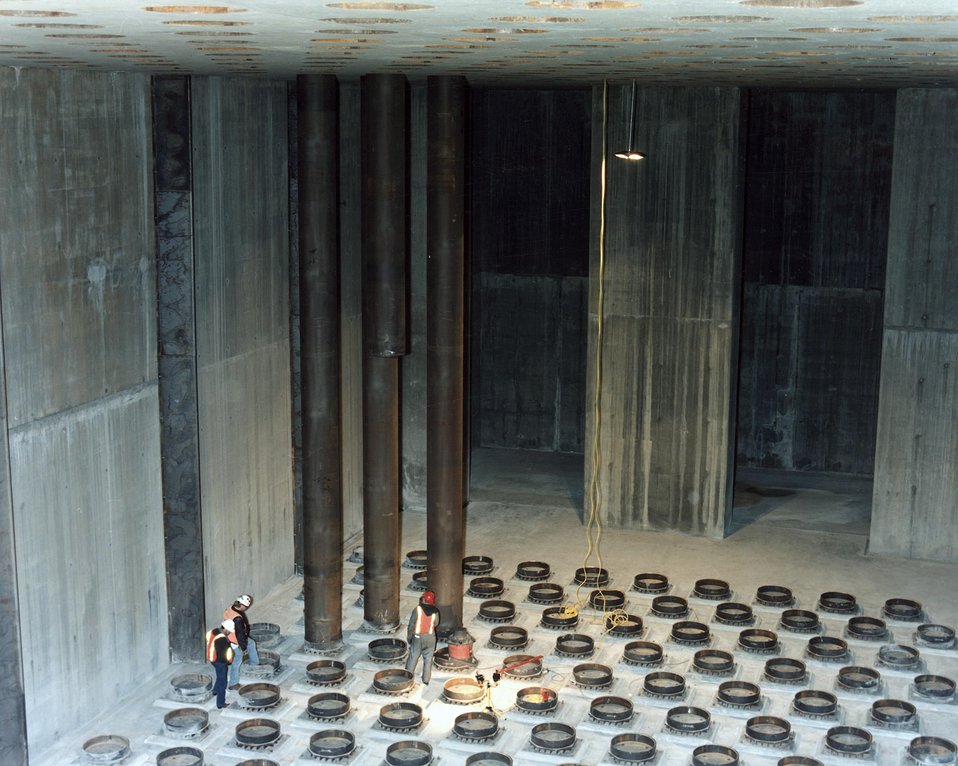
PLACING THE STEEL TUBES THAT WILL HOLD CONTAINERS OF SPENT NUCLEAR FUEL IN THE CANISTER STORAGE BUILDING.
PICTURED IS THE CANISTER STORAGE BUILDING VAULT WHERE WORKERS PACED 220 CARBON STEEL TUBES THAT WILL HOLD CONTAINERS OF SPENT NUCLEAR FUEL IN SAFE INTERIM STORAGE FOR UP TO 40 YEARS. EACH TUBE, 40 FEET LONG AND 28 INCHES IN DIAMETER, IS DESIGNED TO HOLD TWO MULTI CANISTER OVERPACKS, CONTAINING ABOUT SEVEN TONS OF VACUUM DRIED K BASIN SPENT FUEL AND FUEL SCRAP.